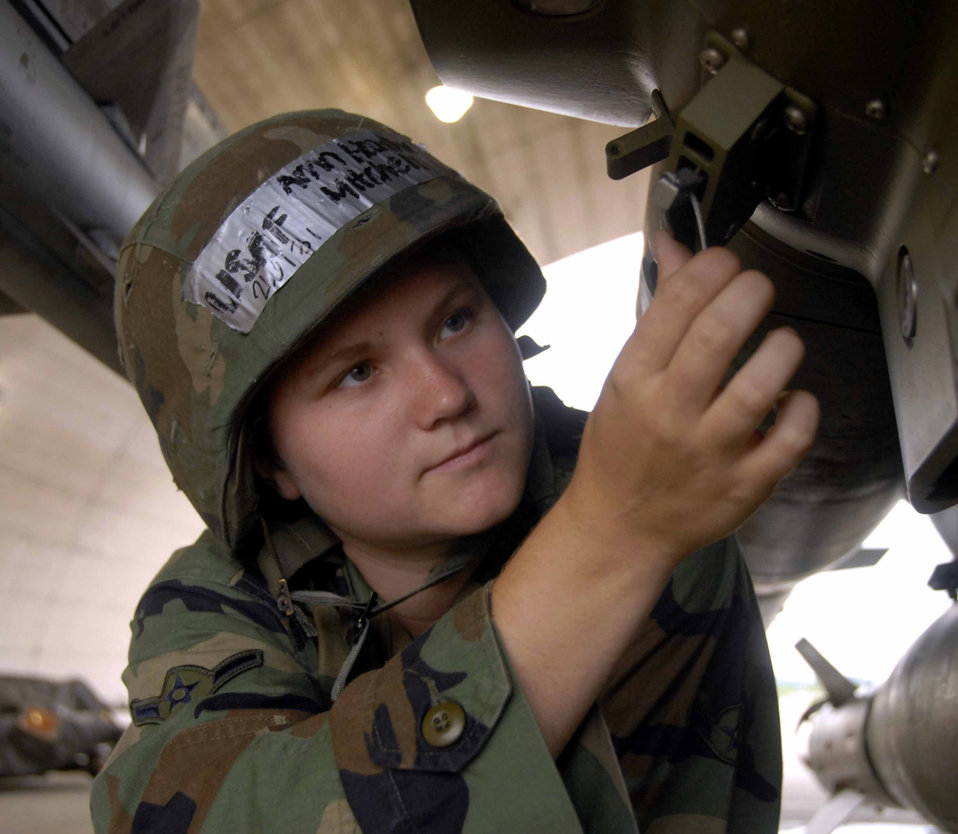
Osan exercise tests Airmen

Airman Heather Mitchell checks a wing release wire on a guided bomb unit-12 loaded onto an F-16 Fighting Falcon aircraft during an inspection July 21 at Osan Air Base, South Korea. If the wire is damaged, the weapon will not release properly from the aircraft. Airman Mitchell is a weapons loader with the 51st Aircraft Maintenance Squadron.